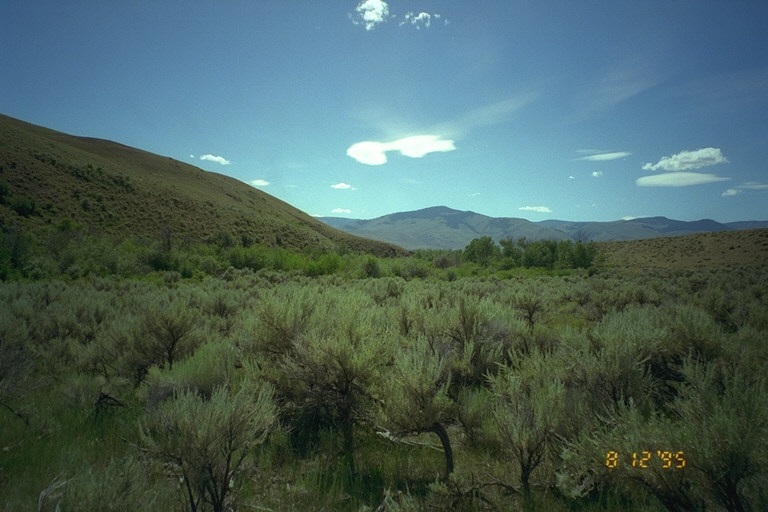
Riparian area Public Lands Salmon Field Office UCSC Upper Columbia Salmon Clearwater District